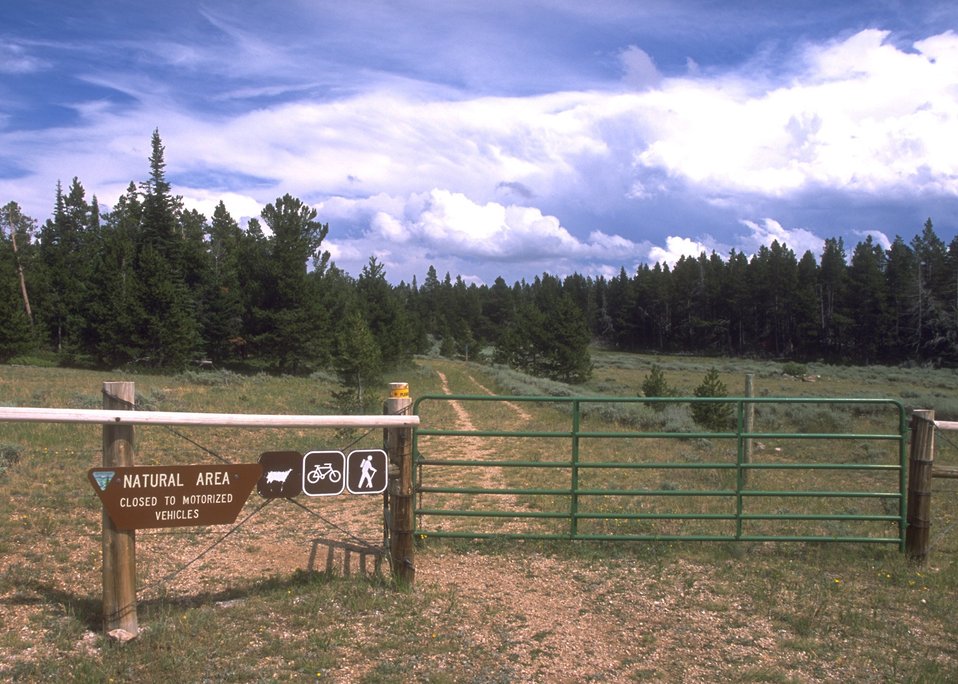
View of Natural Area in Muddy Mountain Recreation, Casper Field Office.